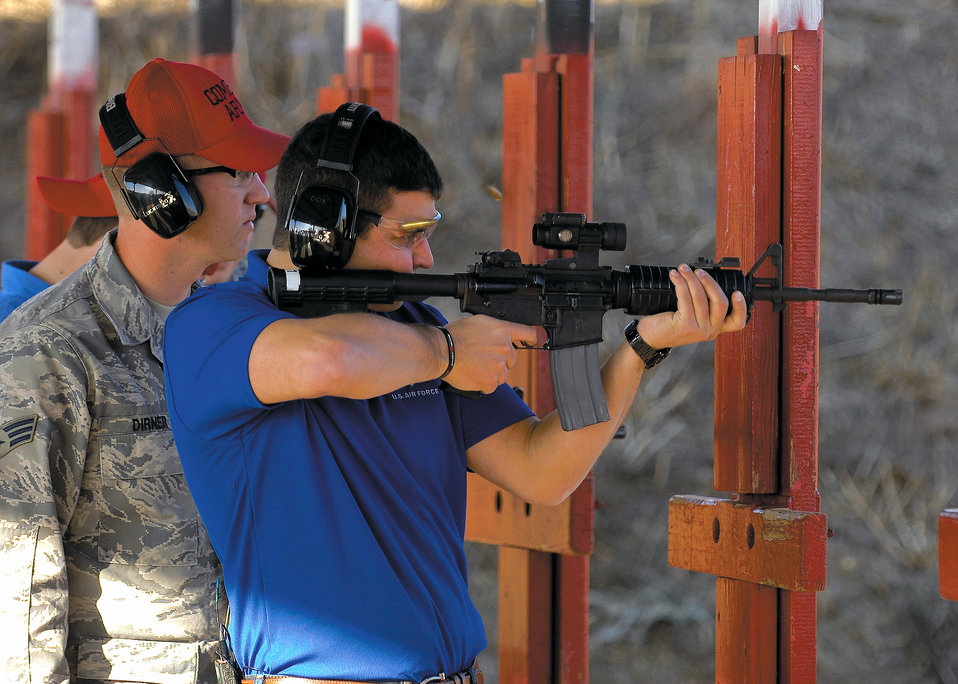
Sorenson visits Lackland

Air Force-sponsored NASCAR driver Reed Sorenson shoots an M-16 rifle at the 342nd Training Squadron proficiency range at Lackland Air Force Base, Texas, Jan. 29.